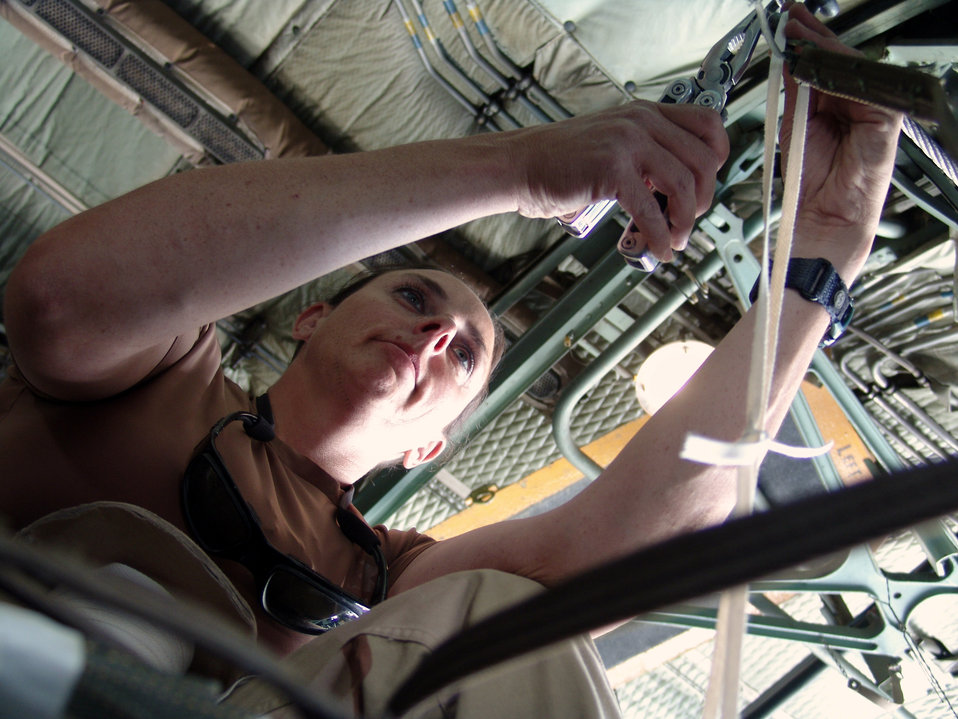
Hercules supply mission

SOUTHWEST ASIA -- Army Chief Warrant Officer 2 Eugenia Emmons, a parachute rigger, prepares containerized delivery system pallets onboard a C-130 Hercules. The pallets containing basic medical supplies, food and blankets were later airdropped to Soldiers in rural areas of Afghanistan who distributed the supplies to needy villagers in the local area.